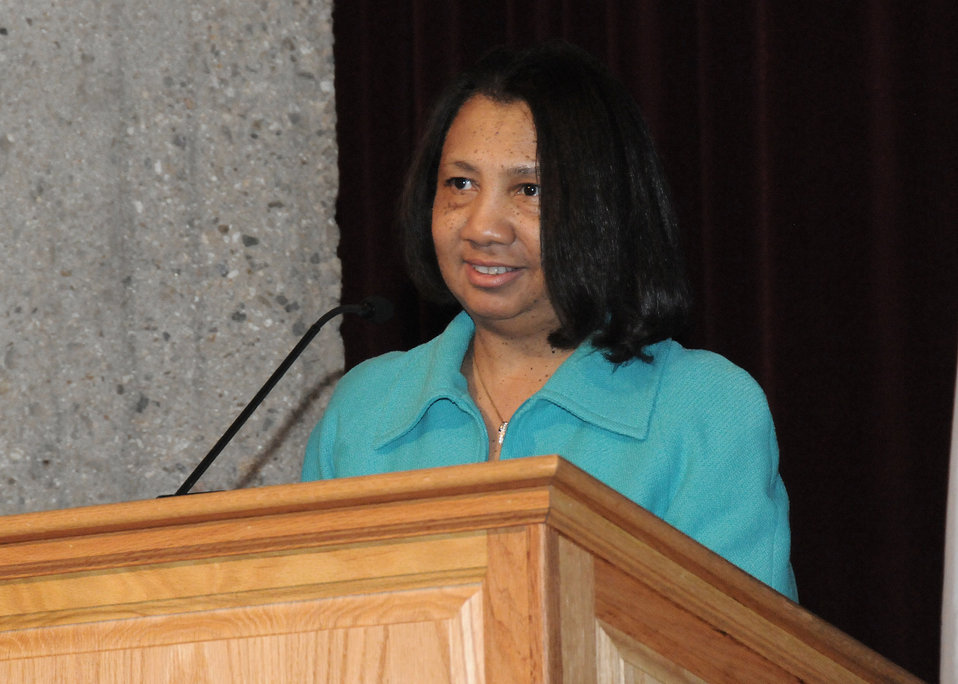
Deputy Assistant Secretary of Departmental Management Alma Hobbs opens the last in a series of six employee listening sessions on the Cultural Transformation of the United States Department of Agriculture (USDA). The session was held on the campus of the University of Massachusetts in Amherst, MA, on Wednesday, May 5, 2010. USDA photo 10di1342-130.